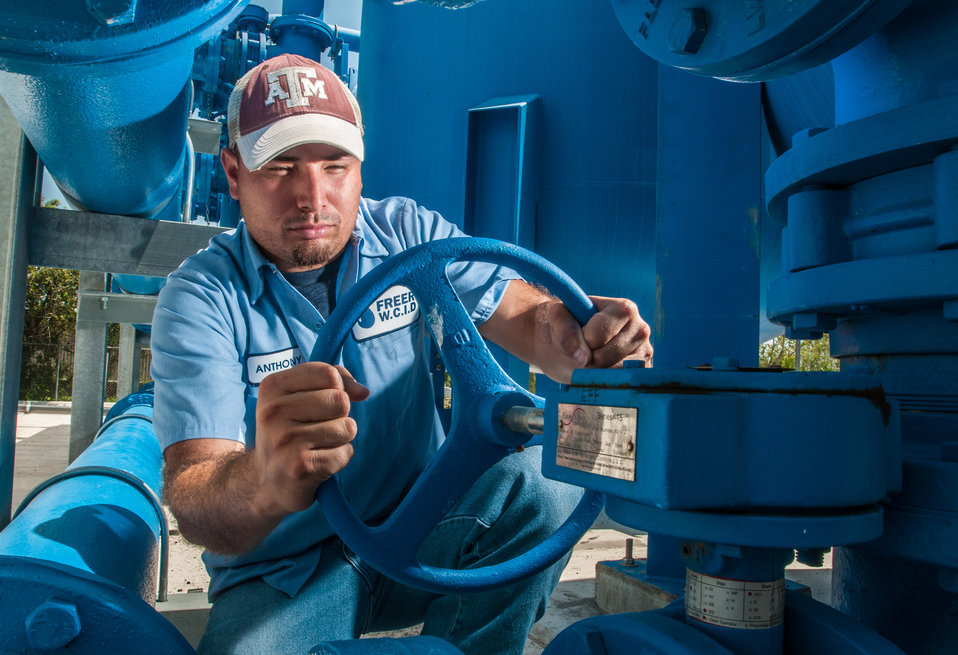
Anthony Arredondo operates a series of valves to route water to one of three arsenic removal absorber vessels with media that attracts arsenic from water that is pumped through it. Freer Water Control and Improvement District benefited from the financial assistance of the U.S. Department of Agriculture’s (USDA) Rural Development (RD) to complete a two-phase approach to meeting the city’s water supply and safety needs, on Tuesday, Jun. 18, 2013.